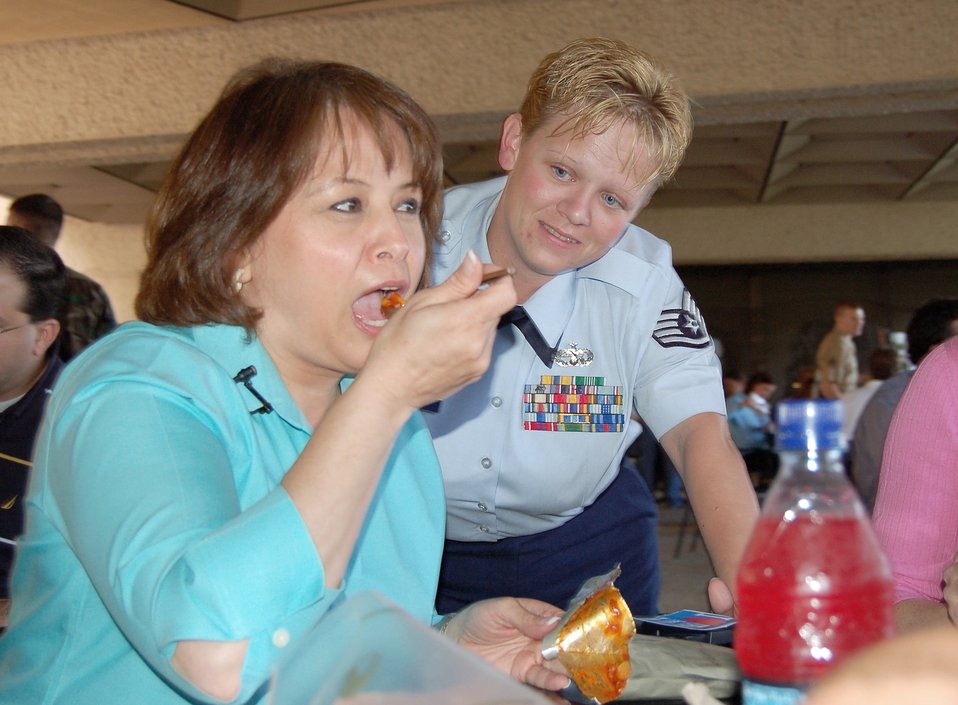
Servicemembers get chance to tell their side of story

Staff Sgt. Paula Newman awaits the reaction of USAA employee Liz Wagner's first taste of a Meals, Ready to Eat, at USAA in San Antonio Sept. 26. Sergeant Newman is assigned to the 11th Logistics Readiness Squadron at Bolling Air Force Base, Washington, D.C.